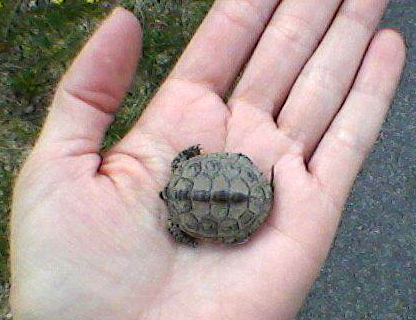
Photo of the Week - Diamondback Hatchling (NJ)

Photo of the Week - April 29, 2013

Hatchling turtles, like this tiny Diamondback terrapin, are becoming active now that the weather is warmer. Watch the roads closely! If you see a turtle in the road, move it to the side in the direction it was headed.

Credit: USFWS

www.fws.gov/northeast

www.facebook.com/ForsytheNWR?group id=0